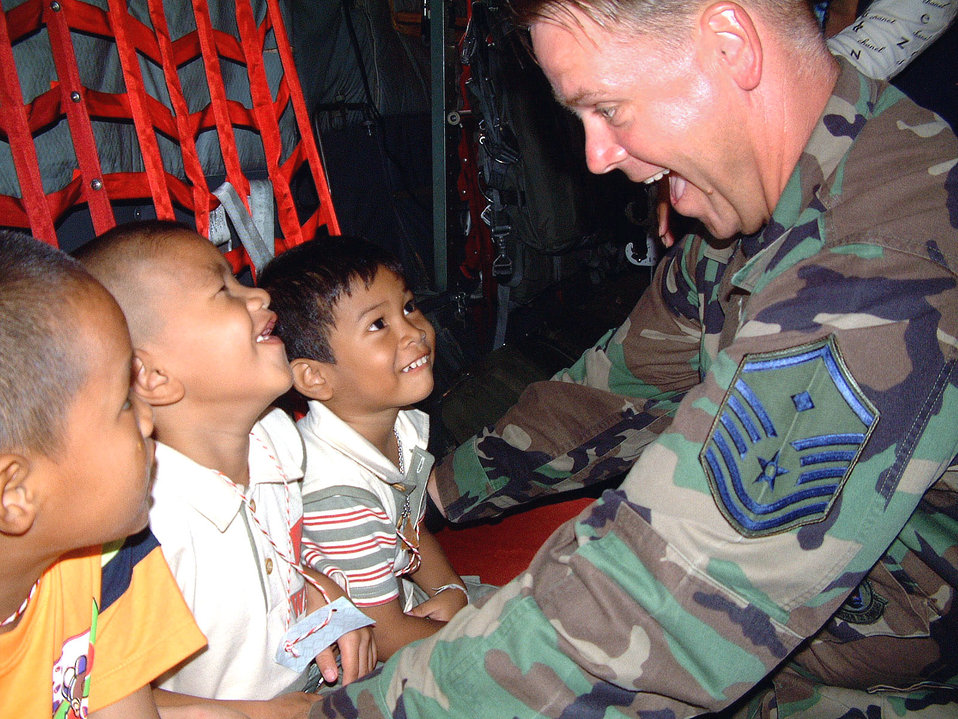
Johns

U-TAPAO AIR BASE, Thailand -- Master Sgt. James Johns shows children from a nearby orphanage how to buckle into an MC-130P Combat Shadow. Johns is the first sergeant for the 17th Special Operations Squadron from Kadena Air Base, Japan. His team is deployed here to train with other U.S. and Thai special operations forces.